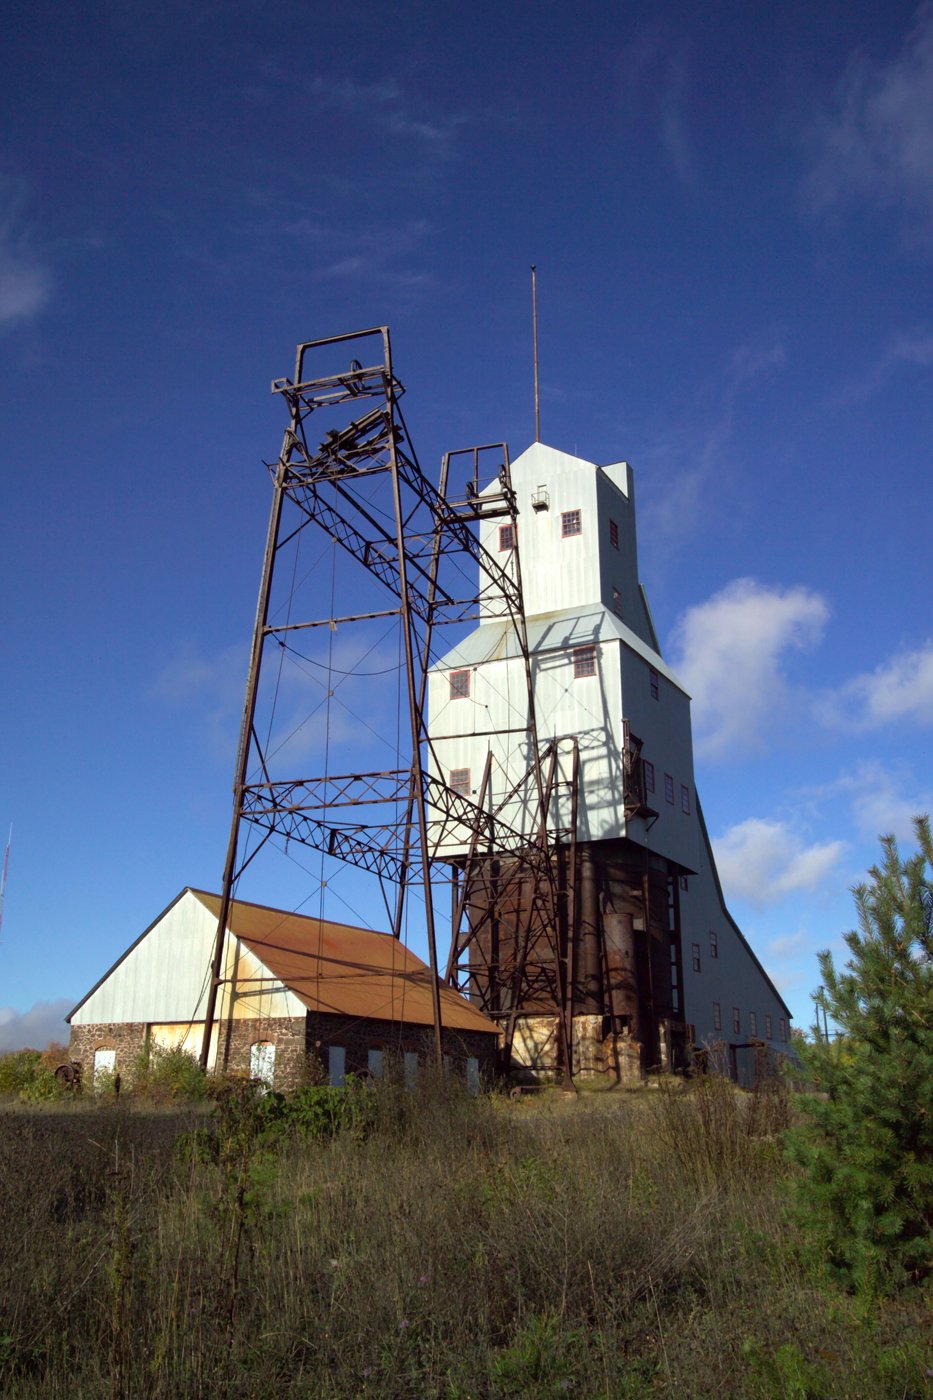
Quincy Copper Mine. Keweenaw Peninsula, Lake Superior